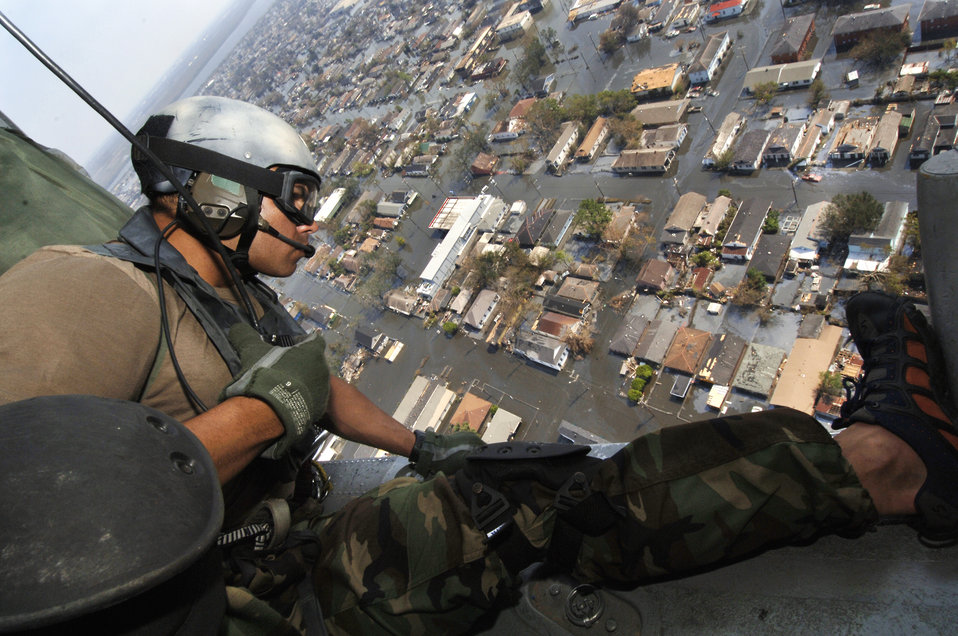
Hoist rescue

NEW ORLEANS -- Tech. Sgt. Lem Torres surveys houses Sept. 2 looking for victims of Hurricane Katrina. Sergeant Torres is a pararescueman in the 38th Rescue Squadron, Moody Air Force Base, Ga.